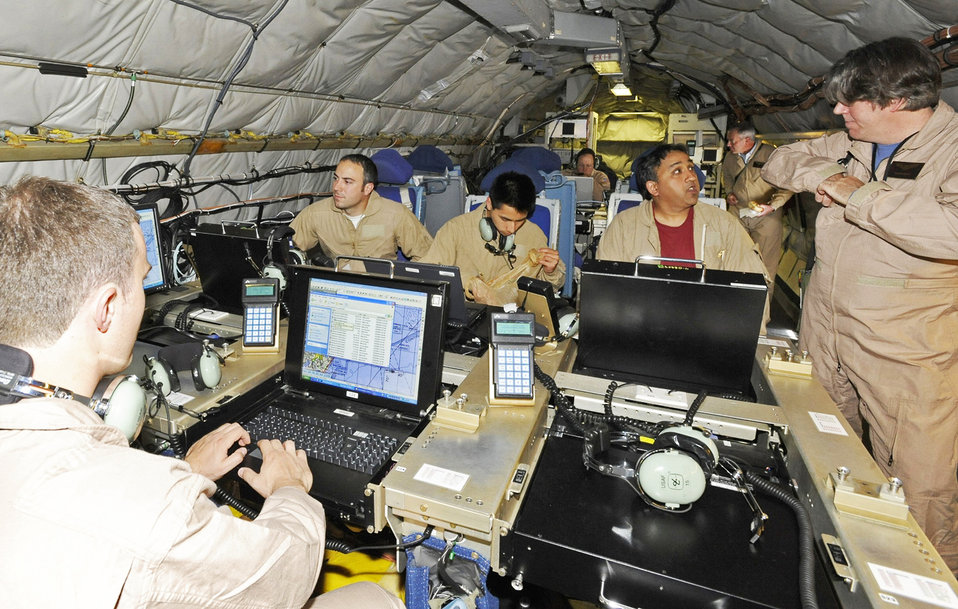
Flight test shows small antenna can do big things

Advanced Multiband Communications Antenna System program team members pass data and monitor location and flight conditions after successfully connecting to the MILSTAR satellite during a June test flight at Hanscom Air Force Base, Mass. The test flight confirmed the utility of a small but powerful antenna that will enable aircrews to receive extremely high frequency satellite communications.